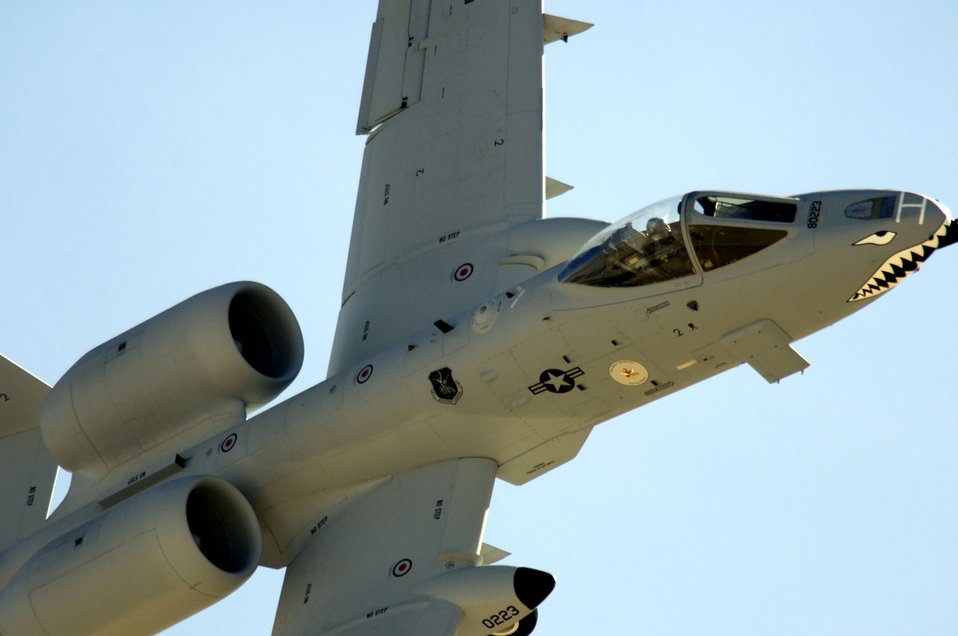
Demonstration team excels at Heritage Conference

An A-10 Thunderbolt II pilot from Air Combat Command's East Coast Demonstration Team performs aerial maneuvers March 3 at the 2007 Heritage Conference at Davis-Monthan Air Force Base, Ariz. The conference provides an opportunity for ACC demonstration pilots to train together with modern and historic military aircraft in preparation for the upcoming air-show season. The demonstration team is assigned to the 4th Fighter Wing at Pope AFB, N.C.